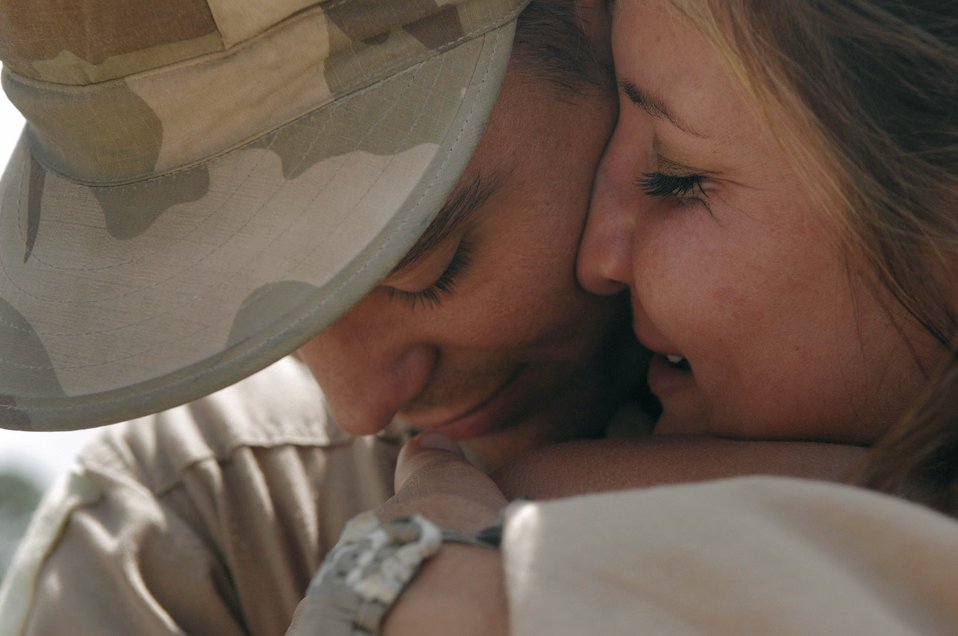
Welcome home!

An Airman from the 823rd Security Forces Squadron hugs a loved one after returning from a deployment April 29 at Moody Air Force Base, Ga. Members of the 823rd SFS recently returned from a six-month deployment to Iraq.